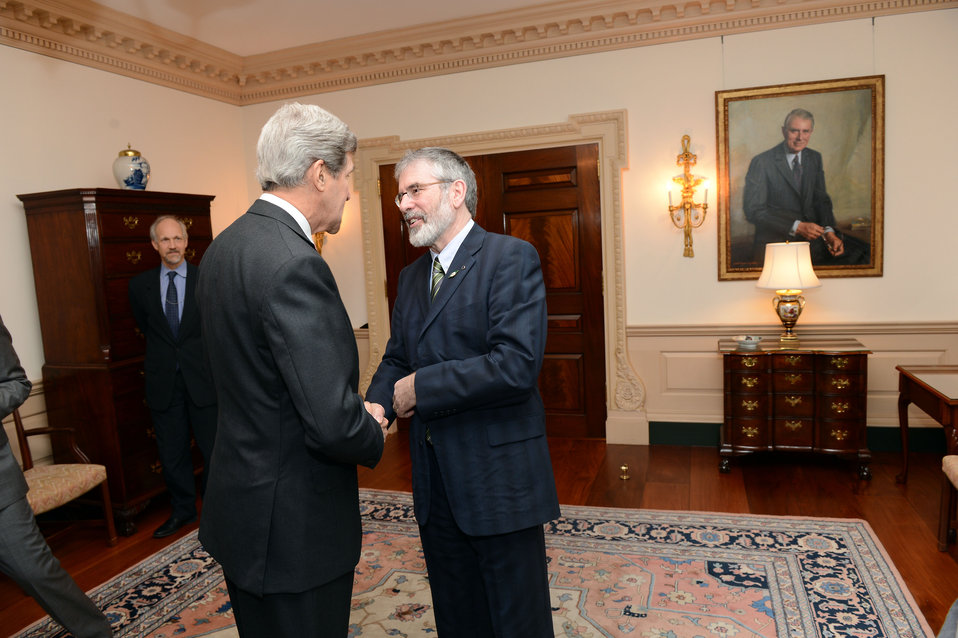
Secretary Kerry Meets With Sinn Fein President Adams

U.S. Secretary of State John Kerry meets with Sinn Fein President Gerry Adams at the U.S. Department of State in Washington, D.C., on March 18, 2013.